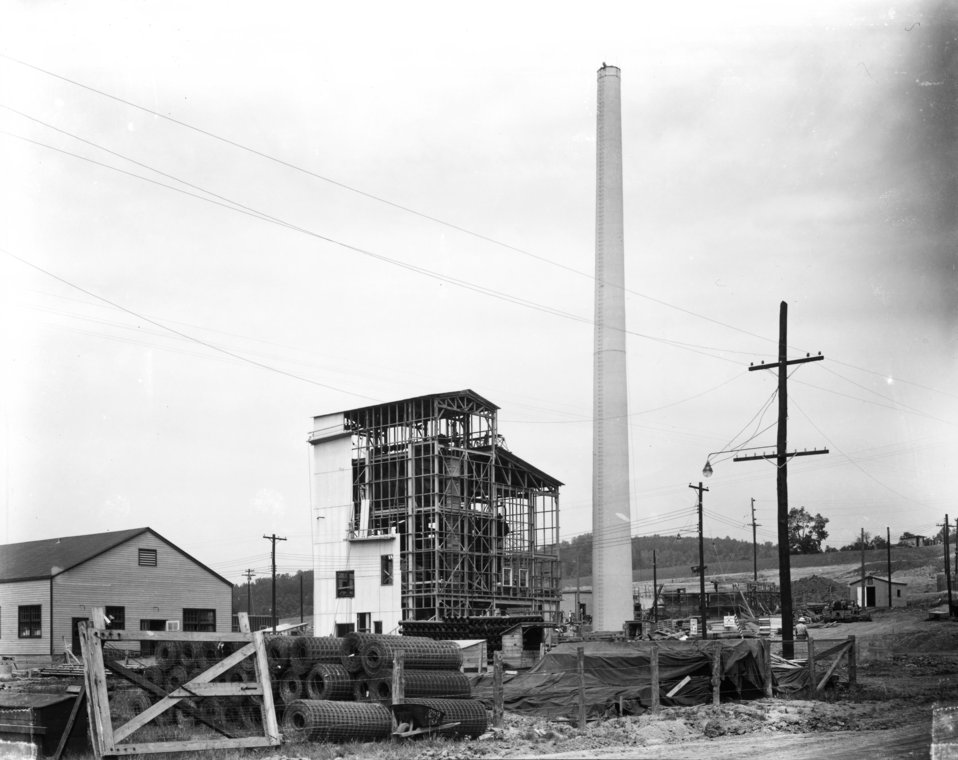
X-10 at Oak Ridge